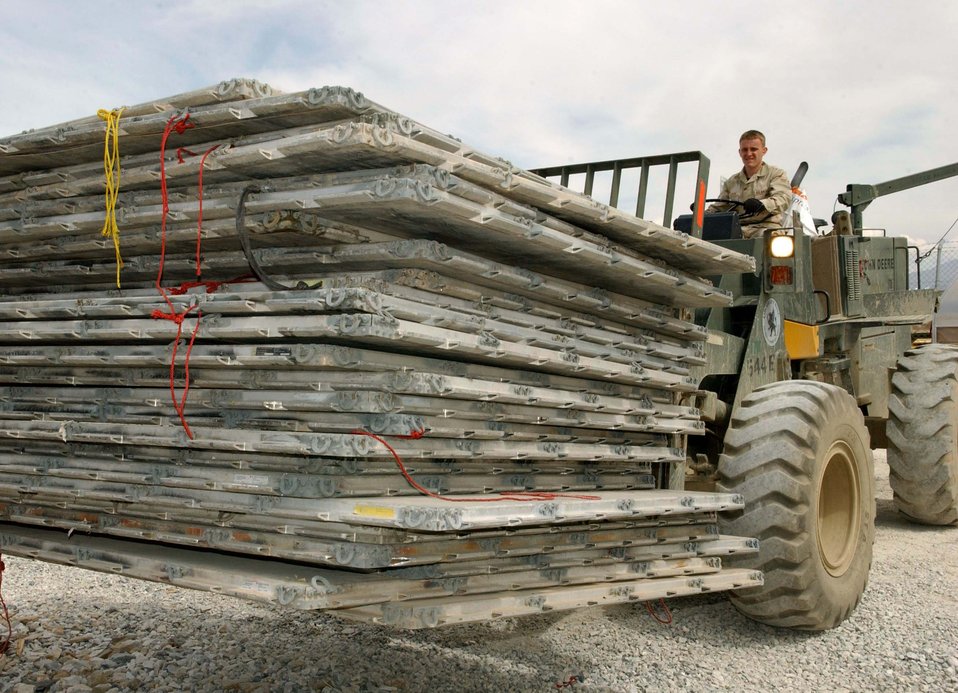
Bagram Airmen recover hundreds of pallets

BAGRAM AIR BASE, Afghanistan -- Senior Airman Wesley Calhoun moves 25 pallets to the logistics storage. Airman Calhoun is a squadron aircraft services team member. Airmen of the 455th Expeditionary Logistics Readiness Squadron located 1,030 pallets and 3,550 top and side nets worth $1.7 million.